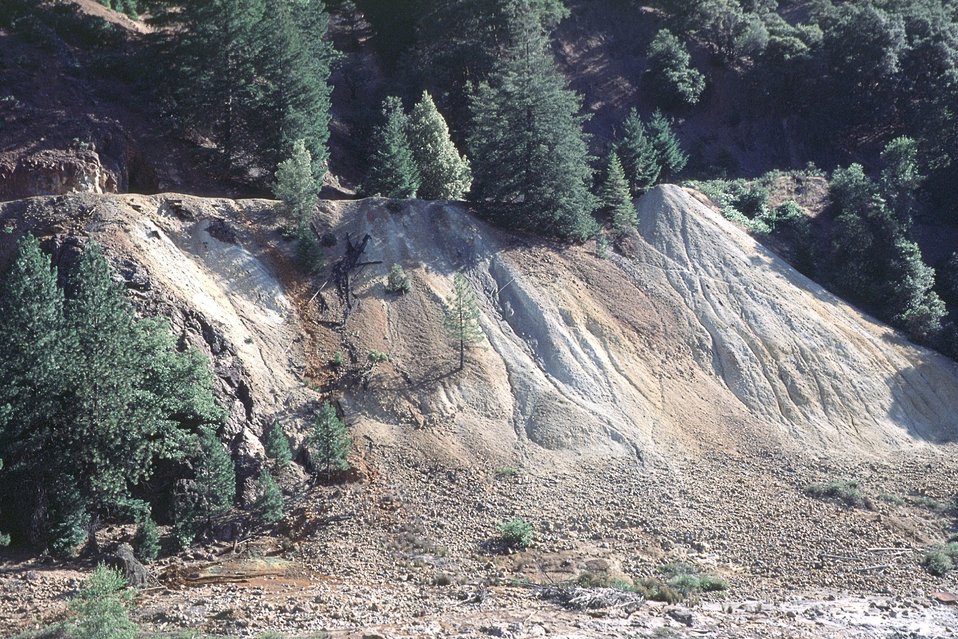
Almeda Mine, Medford District. Camouflaged Aquafix.